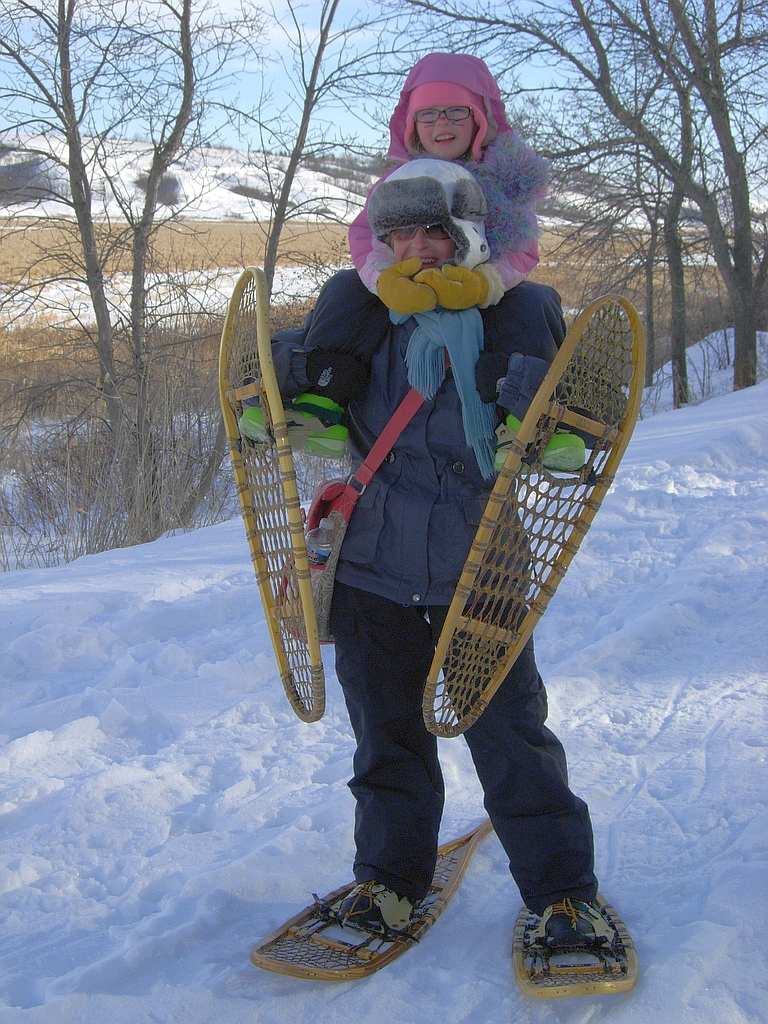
Piggyback

A young snowshoer gets a ride at Des Lacs Refuge in ND.